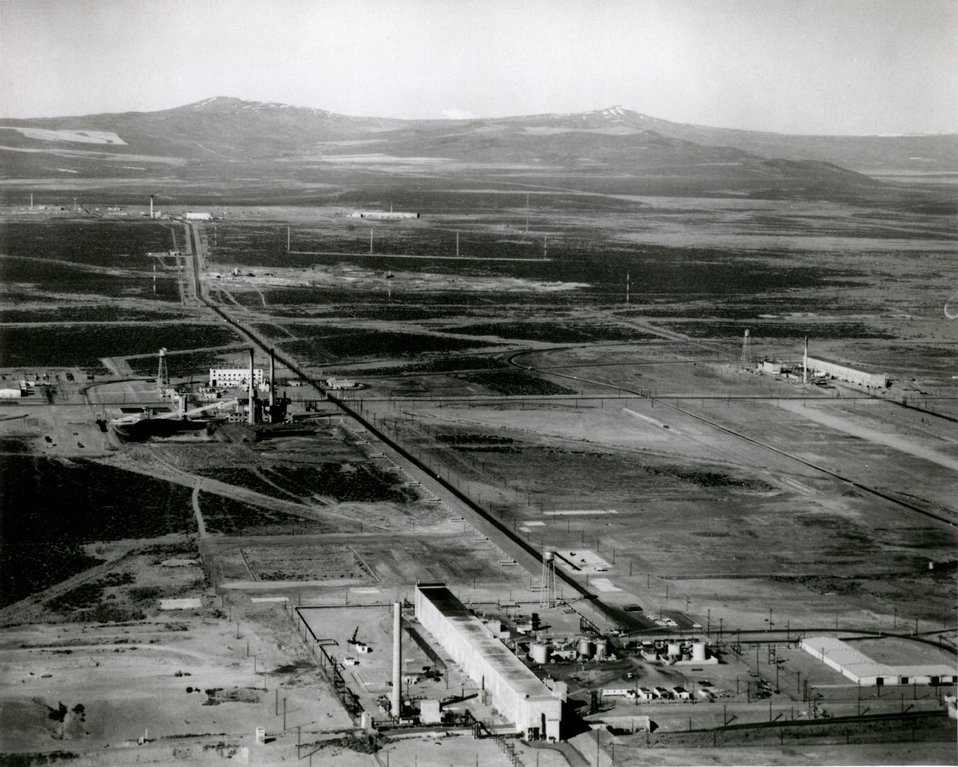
The 200 East Area of the Hanford Works in Southeastern Washington is one of two chemical processing areas on the 575-square-mile nuclear project. In the background is the 200 West Area, the second chemical processing area. c. 1968.